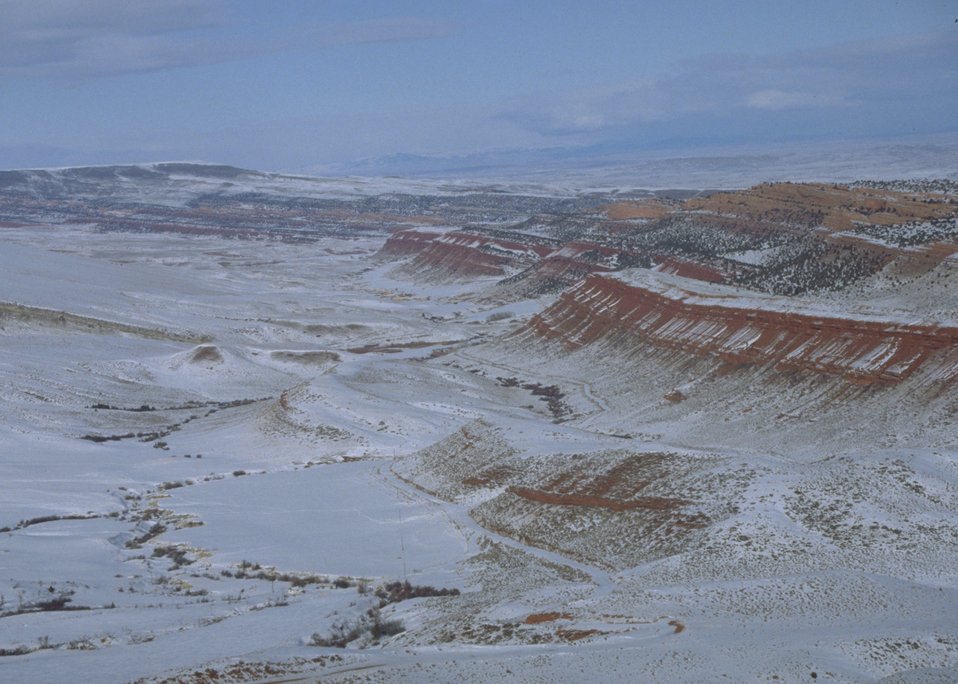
Snowy view of the Red Canyon.